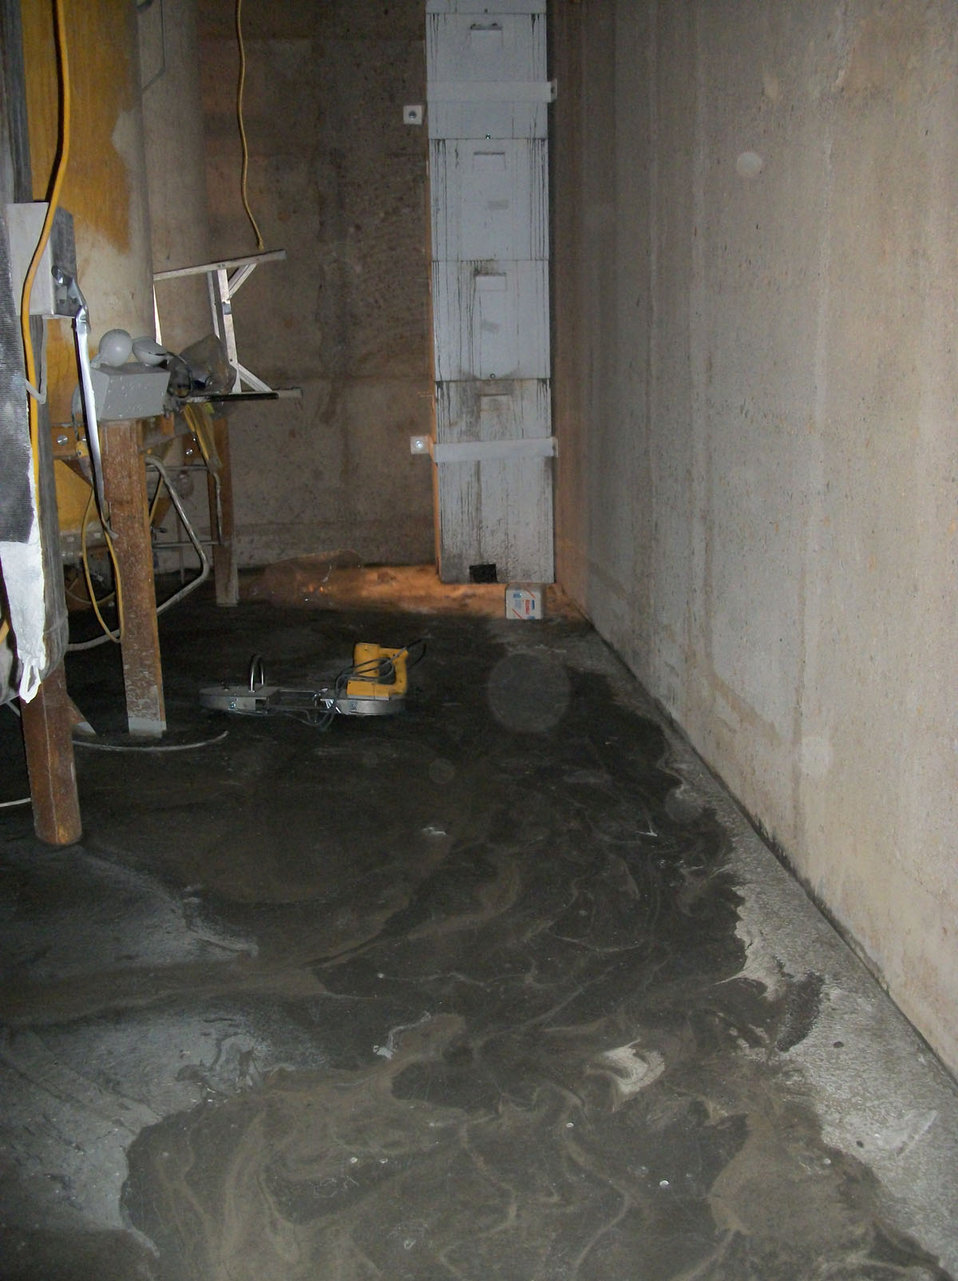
Recovery Act Positions West Valley Demonstration Project for Decommissioning

A two-foot by two-foot concrete column was installed in the corner of the Off Gas Cell to shield workers from a high radiation area. The shielding is necessary to allow workers to safely enter the area to conduct work.

Thanks to an influx of nearly $63 million in American Recovery and Reinvestment Act (ARRA) funds, the West Valley Demonstration Project (WVDP) in southwestern New York State was able to complete a number of projects at the site, as the facility prepares to transition to the first phase of site decommissioning.